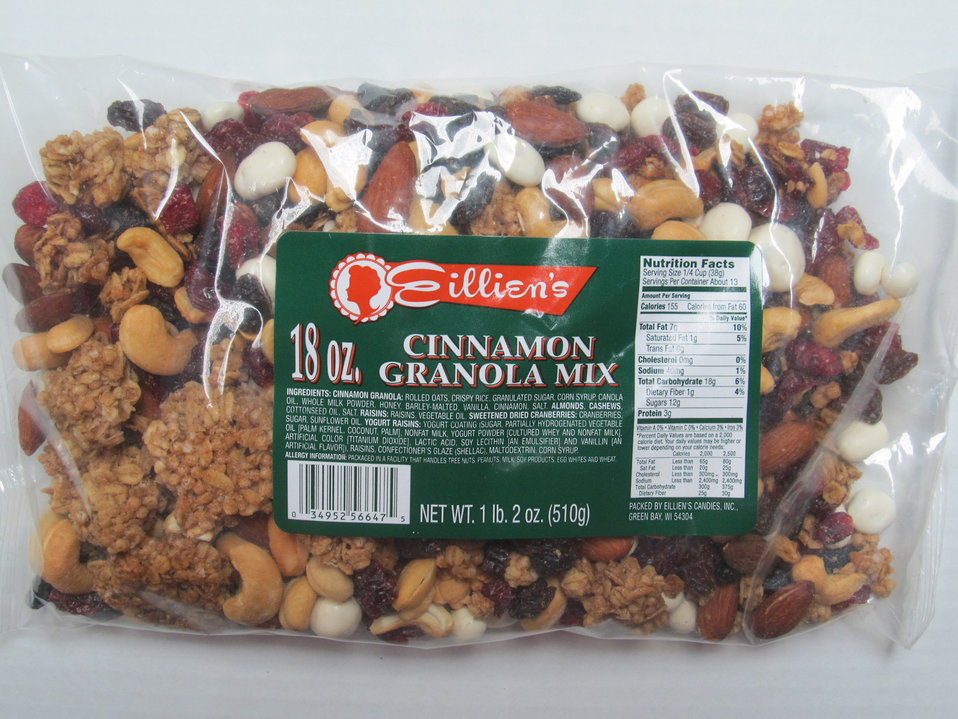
RECALLED - Yogurt Raisins and Granola Mix

December 22, 2011 - Eillien's Candies, Inc. Issues a Voluntary Recall of Select Candy Items Due to Possible Health Risk.